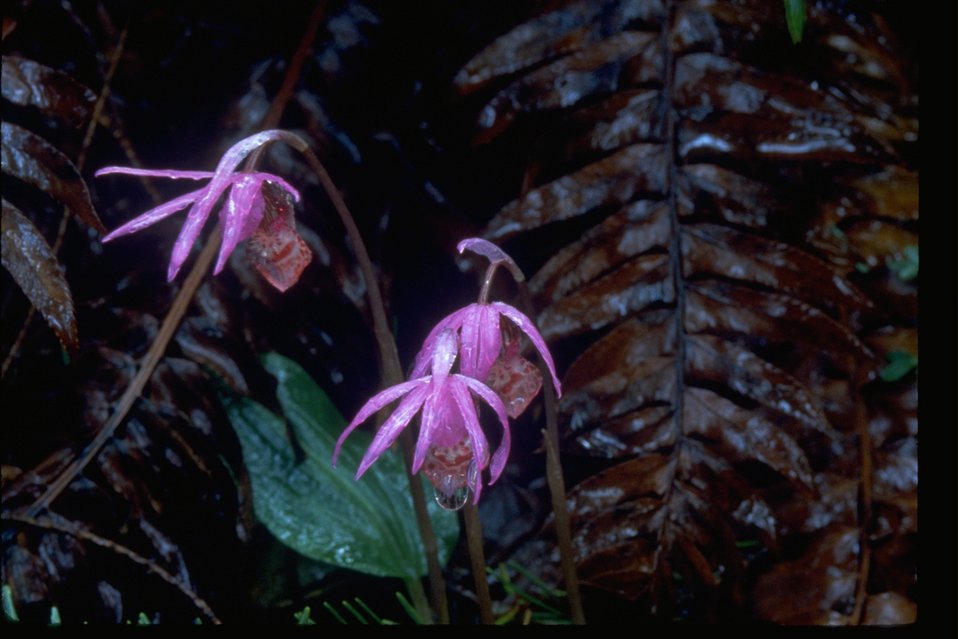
Fairy Slippers (Calypso bulbosa).